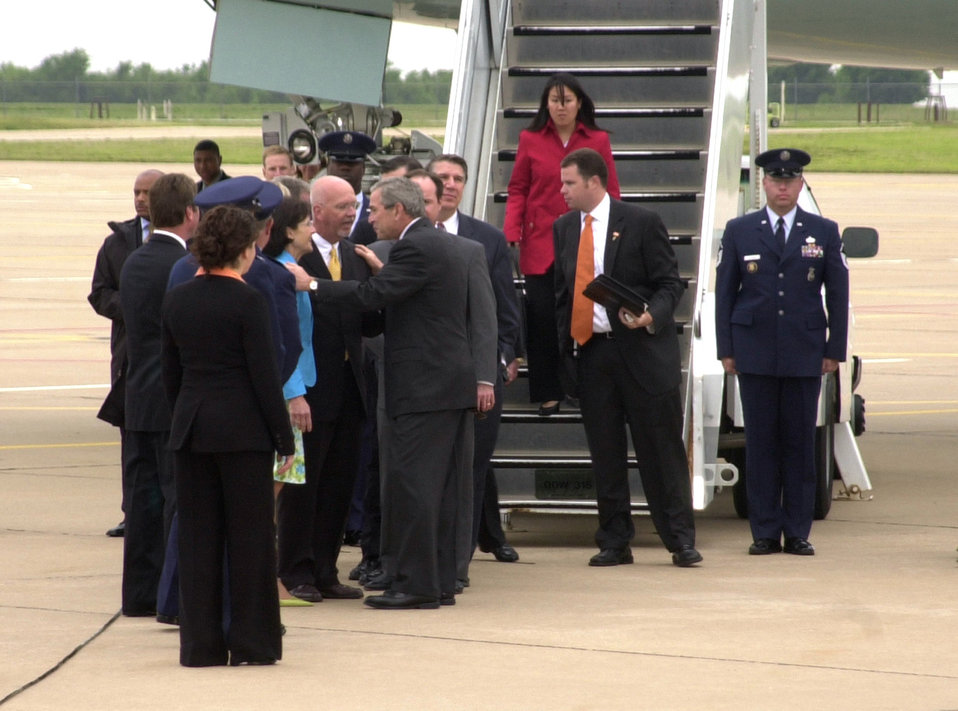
Commander in chief visits Vance AFB

President George W. Bush speaks with Enid Mayor Ernie Currier and his wife Debbie at Vance Air Force Base, Okla., on Saturday, May 6, 2006. The president stopped at Vance on his way to Oklahoma State University in Stillwater to give the commencement address.